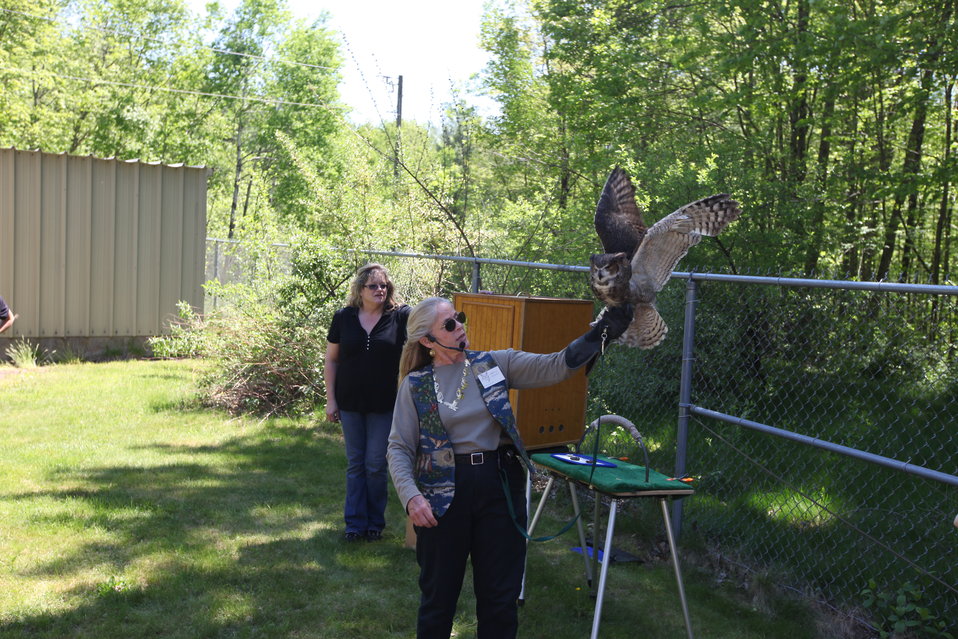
Youth Fishing Derby 2012

Megan Nagel/USFWS